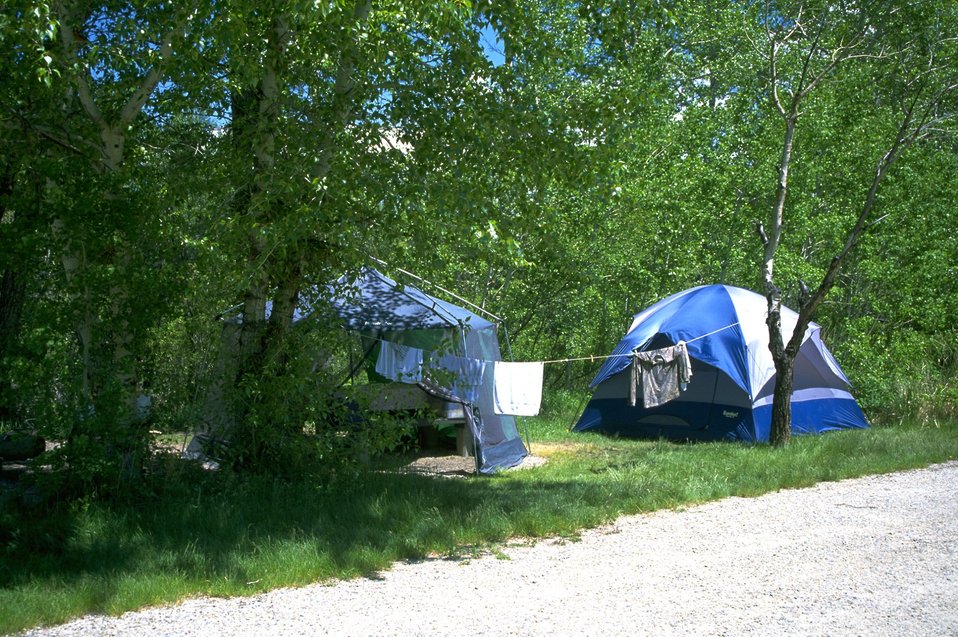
Tent campers at Divide Campground